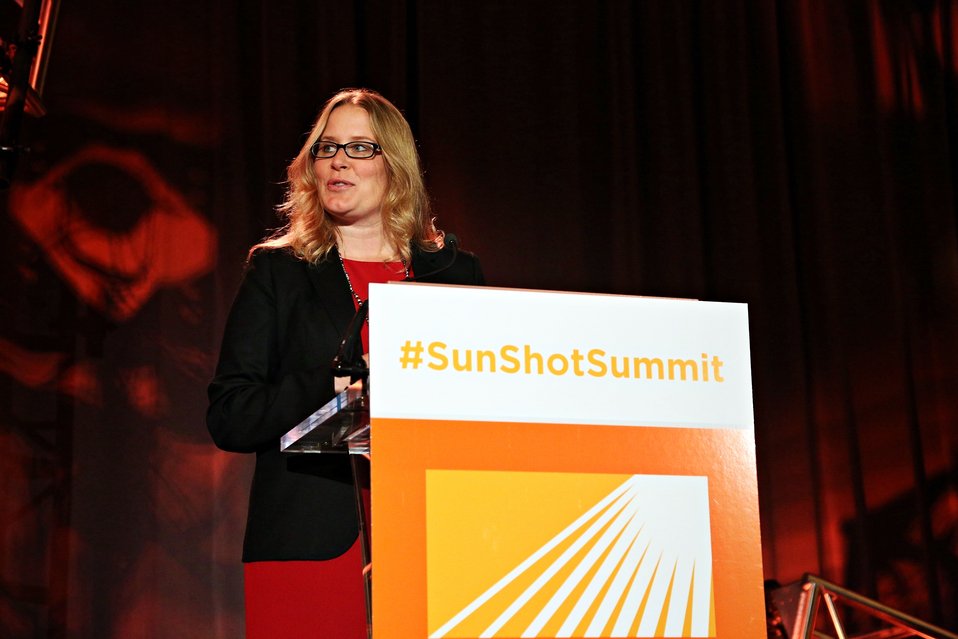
Keynote Session 9

Cristin Dorgelo, Assistant Director, Grand Challenges, the White House Office of Science and Technology Policy discussed the importance of the new SunShot Catalyst competition.